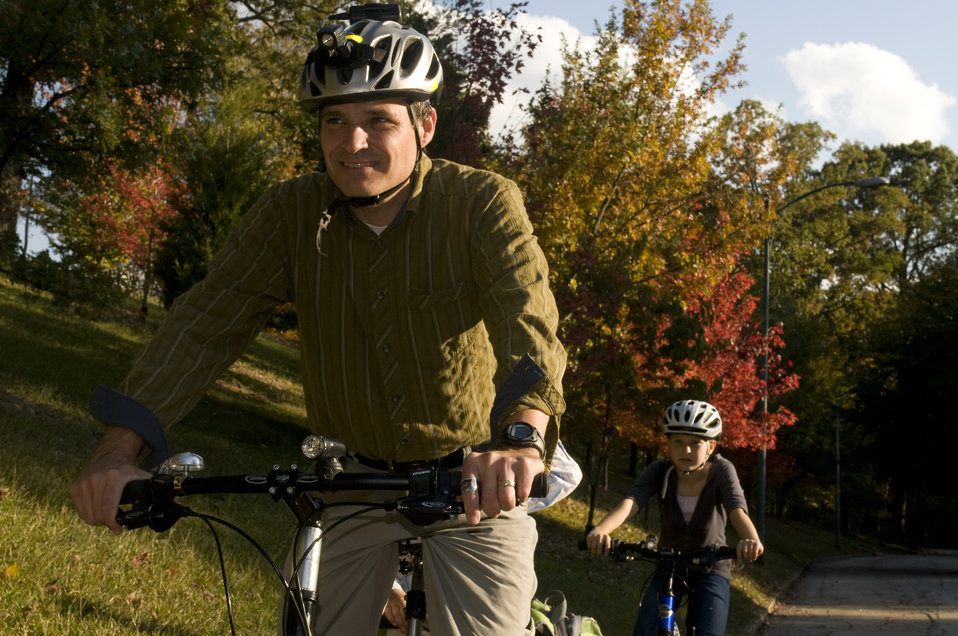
Protective measures having been taken by a careful father, this dad and his two young children were on their way, as they embarked on a Georgian bicycle trip. Riding behind her father, the daughter was riding her own bike, while the son, seated in a small child-safe bicycle seat, was riding on the same bike as dad. All three were wearing aerodynamic safety helmets, and clothing to protect them from the sun, wind and insects. The only thing missing, was a piece of outerwear, which was very bright in color, allow for a greater degree of rider visibility.